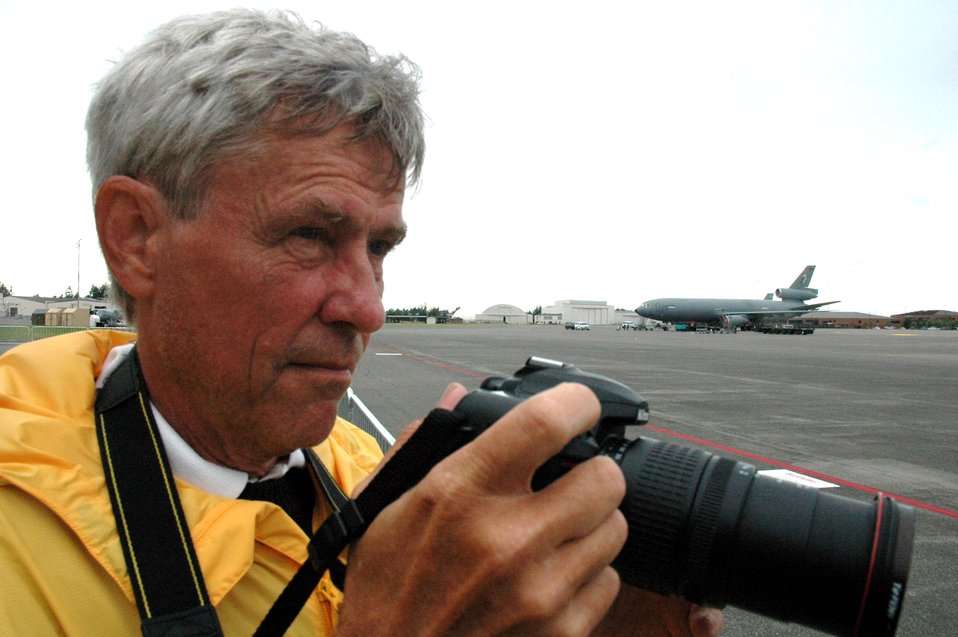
Artists document Rodeo competition

James Consor takes a photo of a KC-10 Extender from McGuire Air Force Base, N.J., during operations July 23 for Air Mobility Command's Rodeo 2007 at McChord AFB, Wash. Mr. Consor is an artist from New York City, and a member of the Air Force Art Program. He has been an artist for more than 39 years and works in oils. He is one of four artists in the Air Force Art Program to visit Rodeo 2007 for future art works for the Air Force.